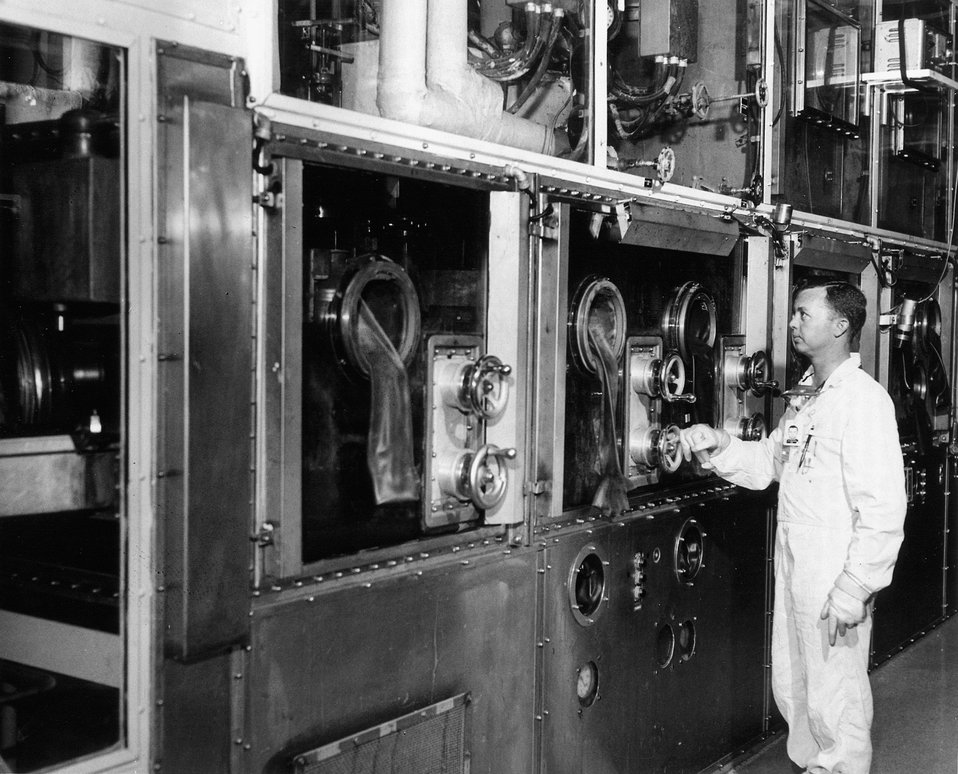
Plutonium is produced for weapons purposes at the Atomic Energy Commission's Savannah River Plant in South Carolina by irradiating uranium in a nuclear reactor. c. 1972